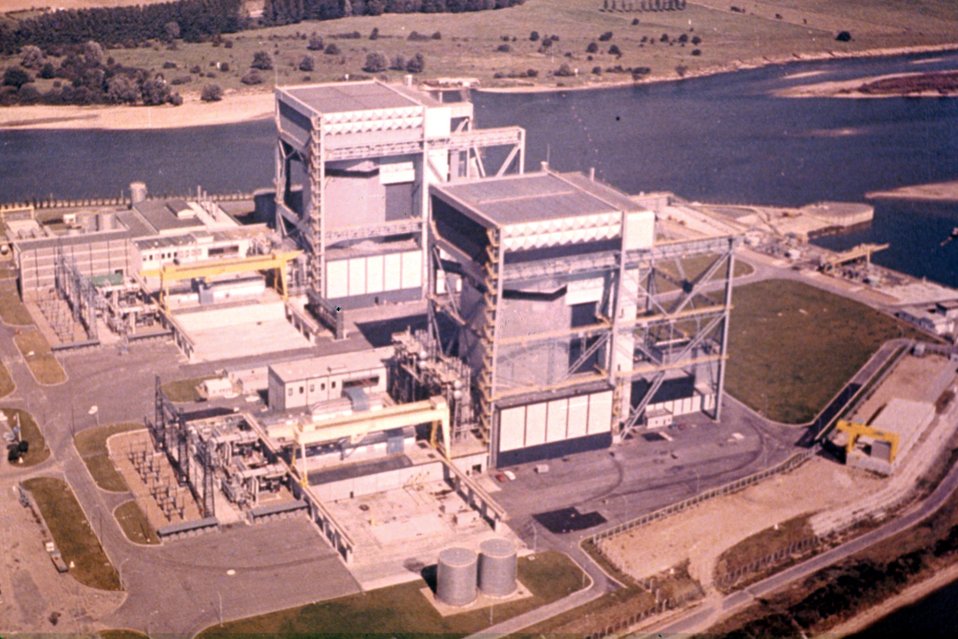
Vue de la centrale de Saint-Laurent-des-Eaux (graphite-gaz).